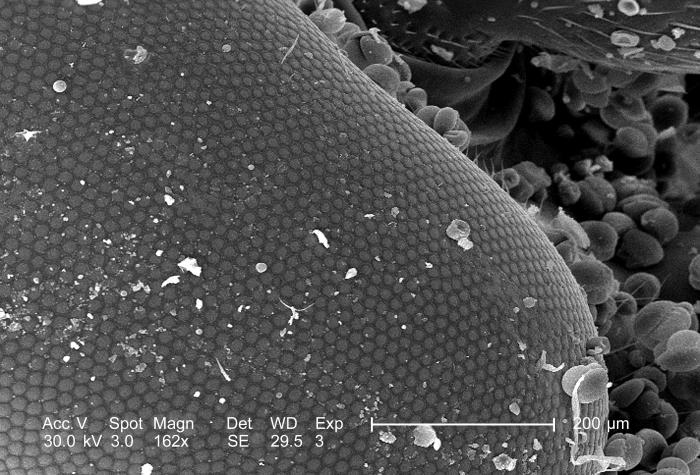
Magnified 162x, this scanning electron micrograph (SEM) depicted a highly magnified view of a compound eye of an unidentified green-colored flying insect that had been found outside on the grounds of the Decatur, Georgia suburbs. The debris covering the eye was mainly vegetative in nature, composed primarily of pollen granules, as well as disintegrated plant fibers.